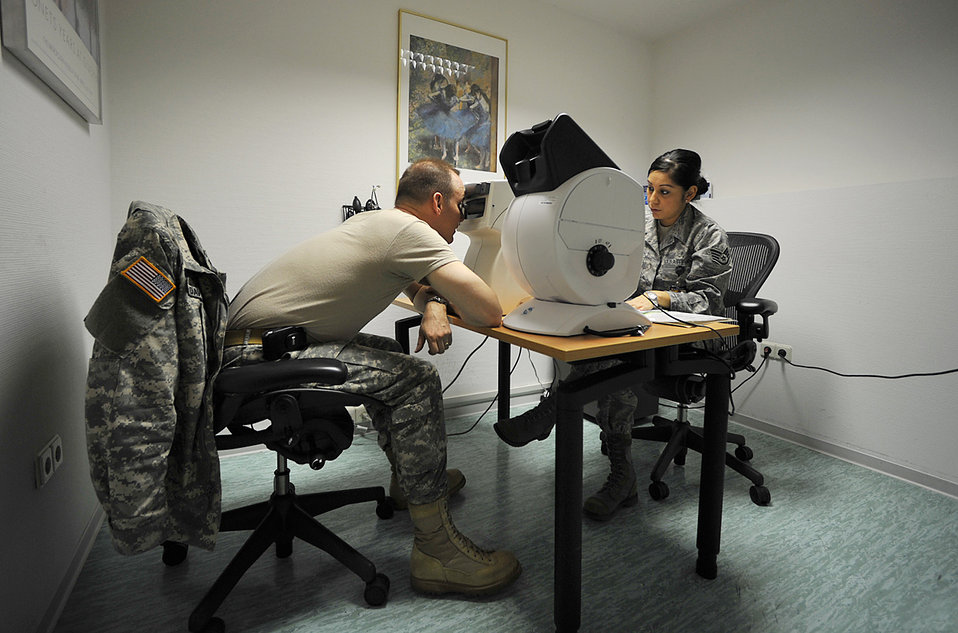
Medical professionals save millions of dollars with common-sense concept

Army Lt.Col. Charles Davis gets an eye exam from Staff Sgt. Liliana Zamora during the U.S. European Command European Strategy Conference March 2, 2010, at Ramstein Air Base, Germany. Colonel Davis is assigned to the EUCOM Office of Defense Cooperation Croatia and Sergeant Zamora is a medical technician with the 86th Medical Special Operations Clinic.